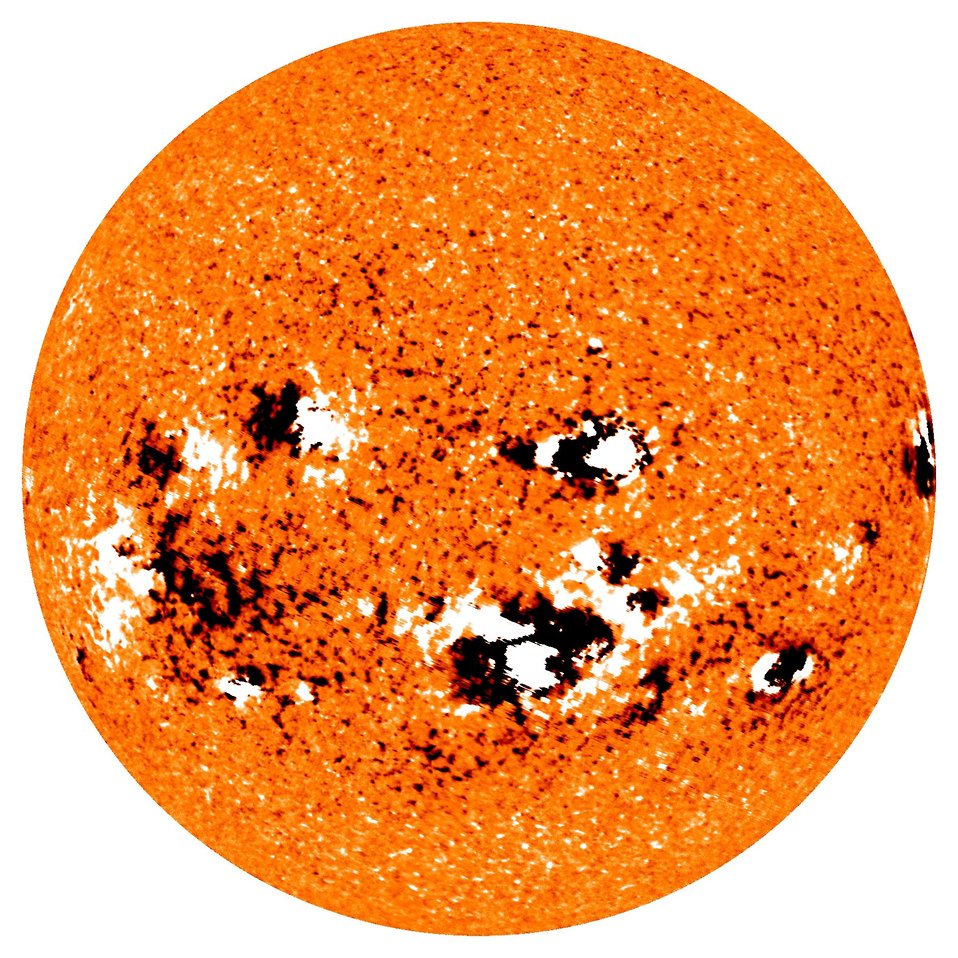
Image of solar storm activity on surface of sun. Solar storms can cause disruption of communications as well as damage power grids and satellites.